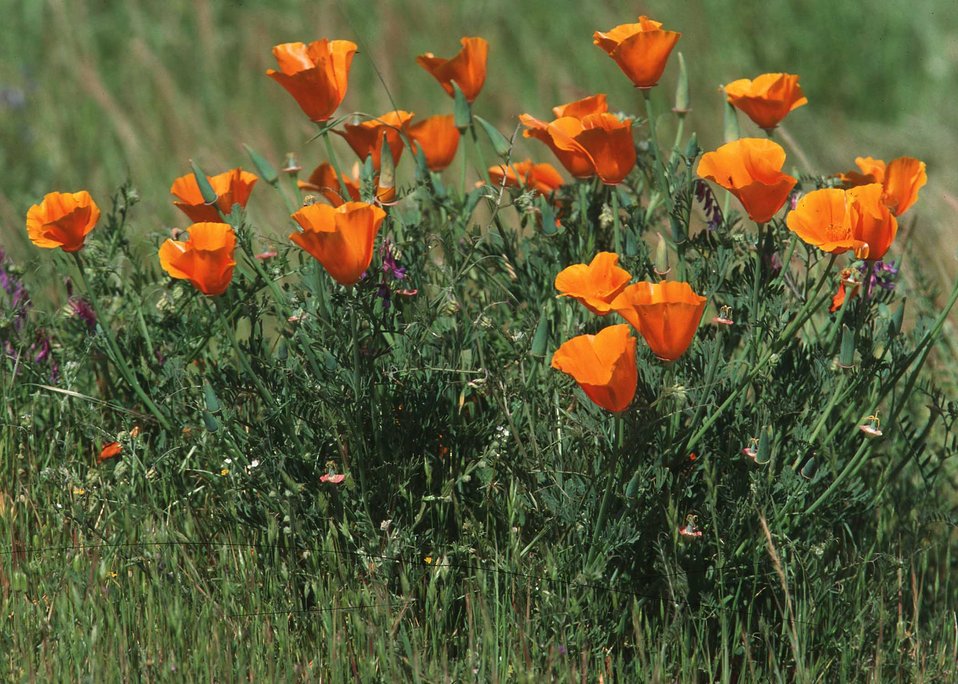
California poppy is a native plant in California. This plant provides color and beauty as well as wildlife habitat.